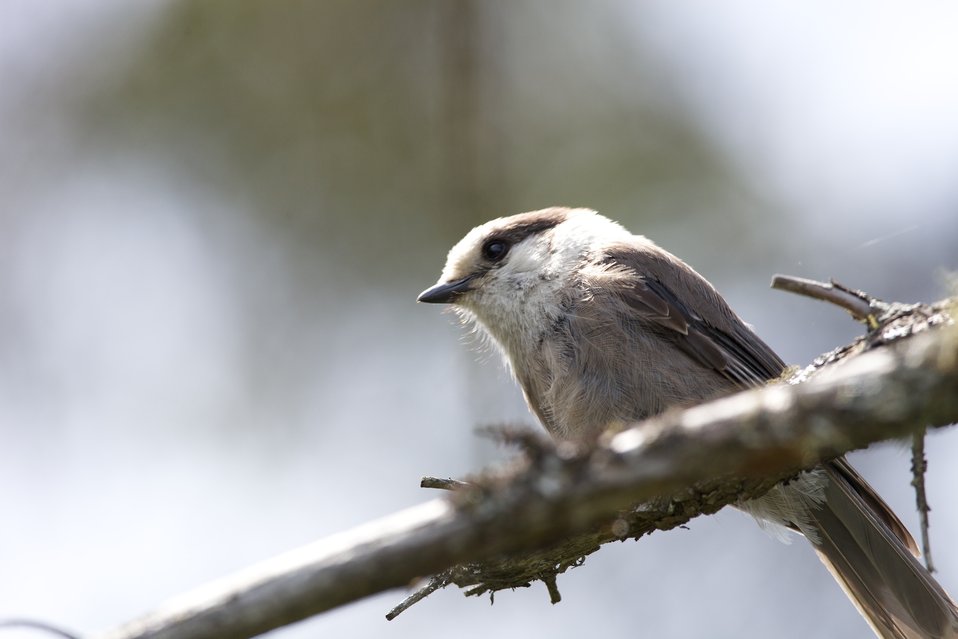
Gray jay

Nulhegan Basin Division, Silvio O. Conte National Wildlife Refuge.